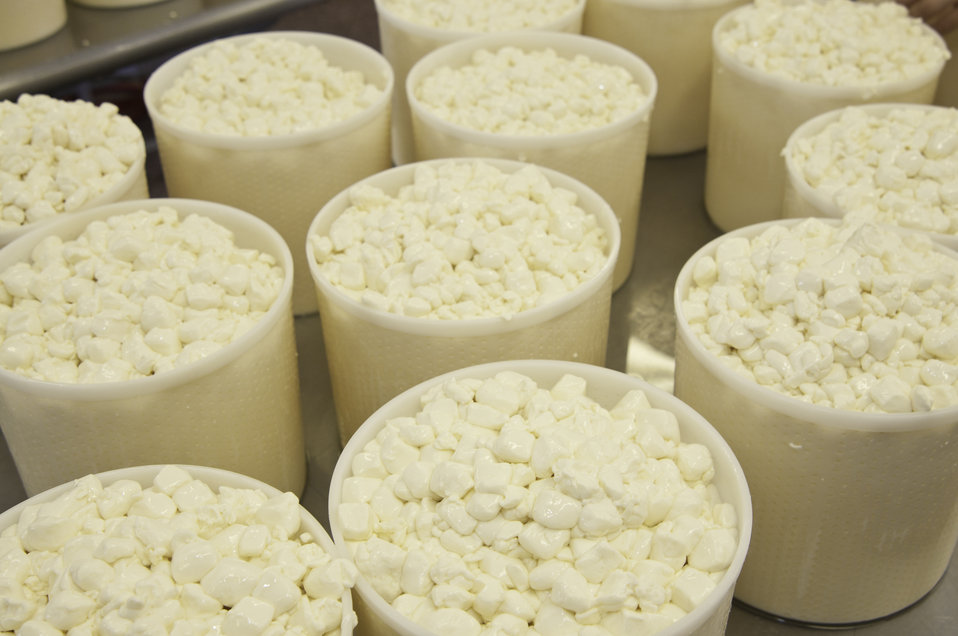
Milk curd in the hooping process at Chapel’s Country Creamery in Easton, MD, the curd will drain in the cheese hoops for 24 hours being turned during the process until the whey has drained. The cheese is then aged 60 days or longer. The dairy’s Chapelle, Talbot Reserve and Bay Blue are placed in a climate-controlled cave, which gives the cheese its unique flavor. The cave-aged cheeses develop their own natural rind.